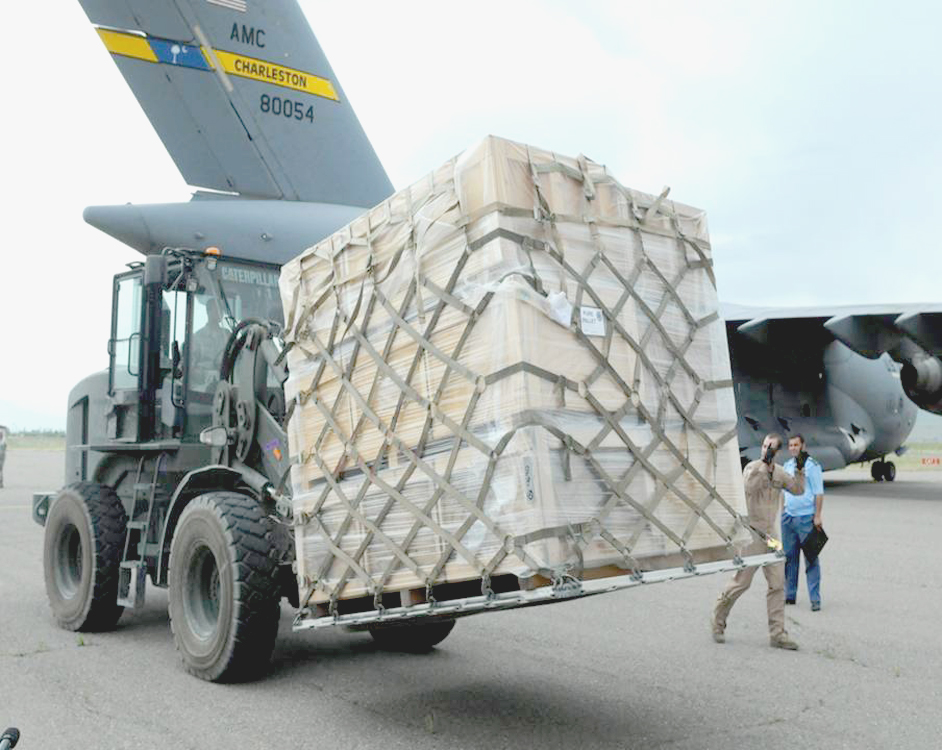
Airmen deliver relief supplies to flood-stricken Tajikistan

Members of the 817th Expeditionary Airlift Squadron use a forklift to remove a pallet full of tents off of a C-17 Globemaster III to help aid displaced citizens of the recent floods in Tajikistan.